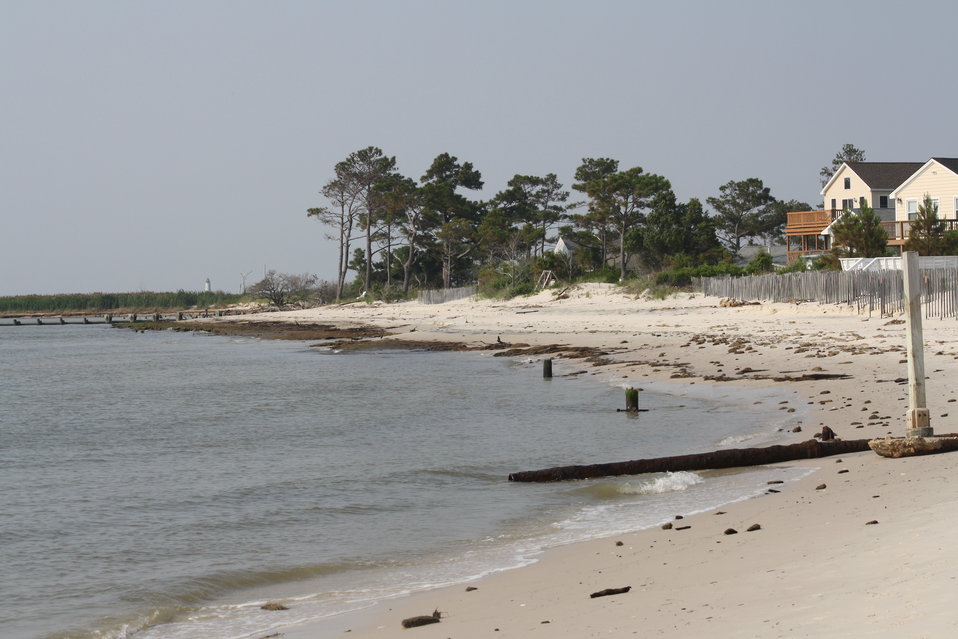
Bavon Beach project

Within the Chesapeake Bay, there are many different shoreline types and conditions that contribute to the overall function of the coastal ecosystem. Though the beaches and sandy shorelines are inherently unstable, they are the most desirable areas for residential and recreational development.

The beaches are created and maintained by the forces of wave action, wind, sediment transport and erosion. In a naturally functioning system, these features are highly dynamic, and they migrate, appear and disappear based on the interactions of these forces.